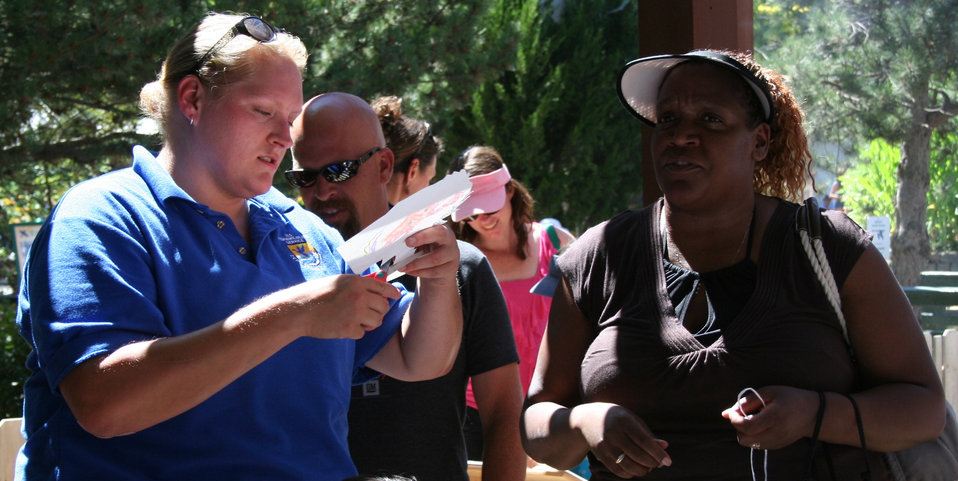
California State Fair mask area at DOI booth

For the first time DOI agencies [US Fish and Wildlife Service, Bureau of Reclamation and Bureau of Land Management] joined together to host an America's Great Outdoors Booth at the California State Fair in Sacramento, Calif., July 14 - 31.

The booth included informational panels and displays as well as a children's activity area. Activities: wildlife masks, temporary tattoos, water-cycle bracelets, fish prints, touch boxes, scat bingo, a green-screen, coloring and bird bingo. Five days a week live raptors, snakes and bats were brought in.

About 50,000 children visitied the booth during the 18-day fair.